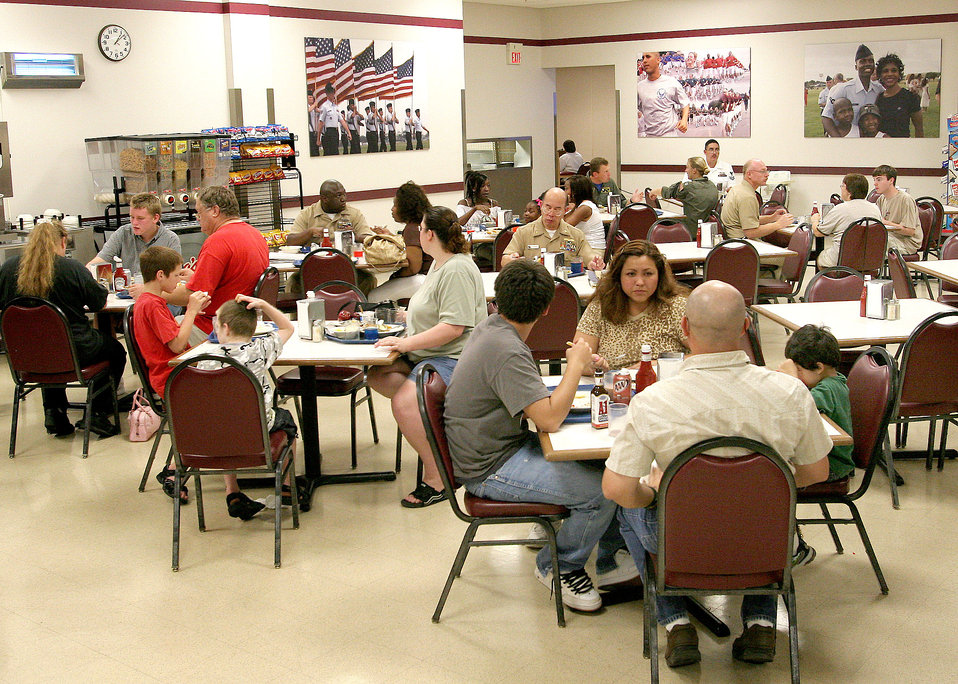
Lackland Airmen take care of Rita evacuees

LACKLAND AIR FORCE BASE, Texas -- Naval air station evacuees from the Texas Gulf Coast eat a hot meal at the 326th Basic Military Training Squadron here. Lackland Airmen are helping military members and their families and pets in wake of Hurricane Rita. The evacuees are from Texas naval air stations located in Ingleside, Kingsville and Corpus Christi.